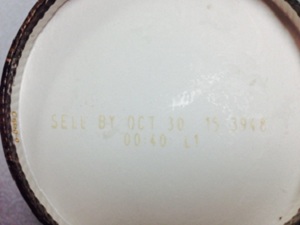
RECALLED - Chocolate Hazelnut Mascarpone Ice cream and Caramel Hazelnut Fudge Truffle Ice cream

April 26, 2014 – Product Recall – Two Private Selection Ice Cream Flavors Recalled for Undeclared Allergen.